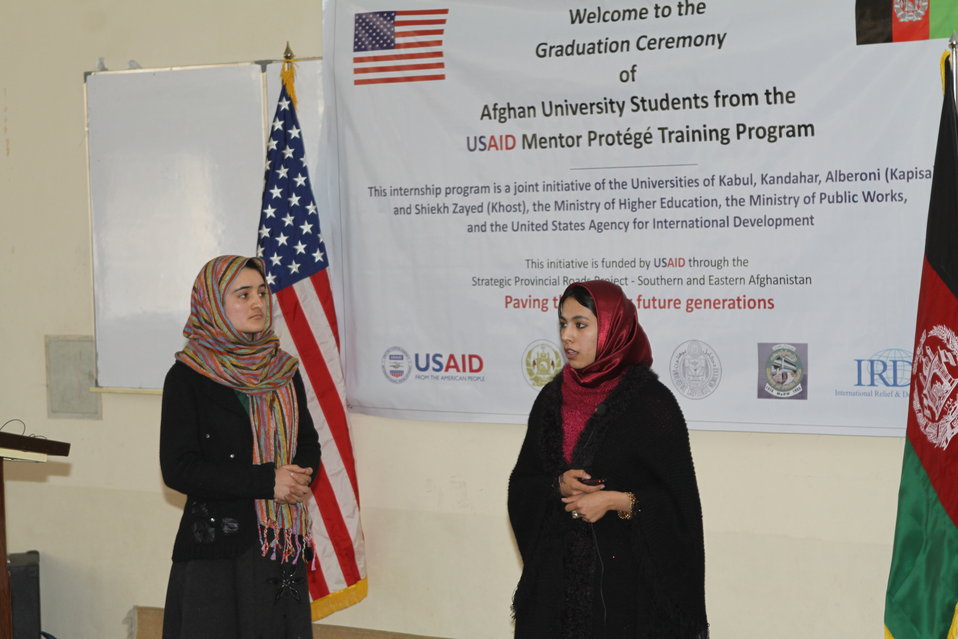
Female University Students Complete Internship

Kabul, Afghanistan | March 16, 2011 – In response to a demand for qualified Afghan engineers, Kabul University celebrated completion of an intensive five-month Mentor Protégé Training Program today by 10 female fourth year university students. The Training Program is a joint effort between the Government of the Islamic Republic of Afghanistan, the U.S. Agency for International Development (USAID), and the Universities of Kabul, Kandahar, Alberoony in Kapisa, Shiekh Zayed in Khost. The graduation ceremony highlighted collaboration with these national institutions in building the technical skills of young Afghans, made possible by USAID.

Four of the interns are engineers, while the remaining six are from the faculties of computer science, economics, and psychology.

Speaking about the event, H.E. Minister of Public Works Abdul Qudus Hamidi said, “The future of Afghanistan lies in developing the skills of our youth, and the engineering skills of these graduates today represent a small but important step forward for the country.”

Keynote speakers at the ceremony included H.E. Deputy Minister of Higher Education Abdul Rahim; USAID Senior Deputy Mission Director Robert Hellyer; and Chancellor of Kabul University Professor Hamidullah Amin. Approximately 150 people, including current and former students attended the graduation.

Launched last year, the Mentor Protégé Training Program has provided qualifying students the opportunity to intern with USAID’s Strategic Provincial Roads-South and East Afghanistan project and gain practical experience in a real work environment. The goal of the program was to offer interns the opportunity to gain hands-on experience to reinforce their formal studies. A total of 30 students from four national universities have benefitted from this program.

“The promotion of women’s rights is integrated into the overall U.S. Government development strategy and can be found in key programs, including education, healthcare, security, rule of law, political participation, agriculture, and economic development,” said Robert Hellyer. “The U.S. Government is committed to the Afghan leadership of programs that directly enhance development, particularly as it relates to women’s issues.”

This event also highlighted the learning achievements of students and emphasized the importance of hands-on internship programs. The curriculum is designed to instill students with the knowledge and confidence to qualify for engineering positions upon completion of their fourth year at their respective universities.